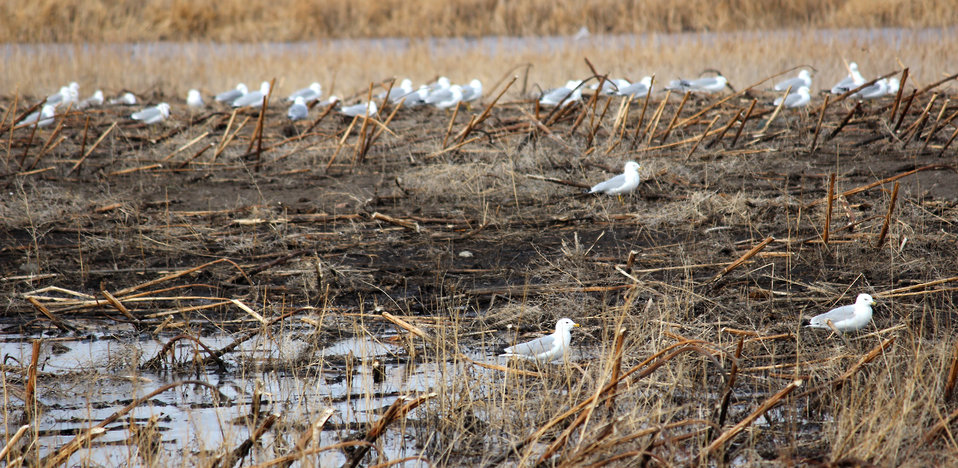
Ring-billed Gulls

These gulls are very common and can be identified from Herring gulls by the dark band around their bill and their smaller size. These were sitting in a harvested sunflower field south of Kulm.